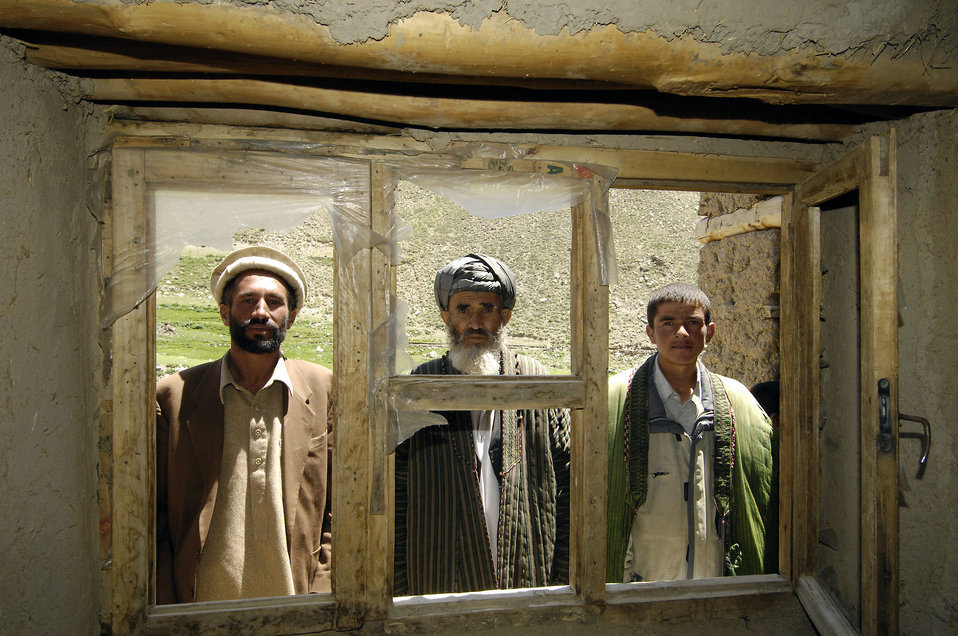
Keeping a watchful eye

Villagers in the Panjshir Province, Afghanistan watch and wait during a recent medical visit by the Panjshir Provincial Reconstruction Team.